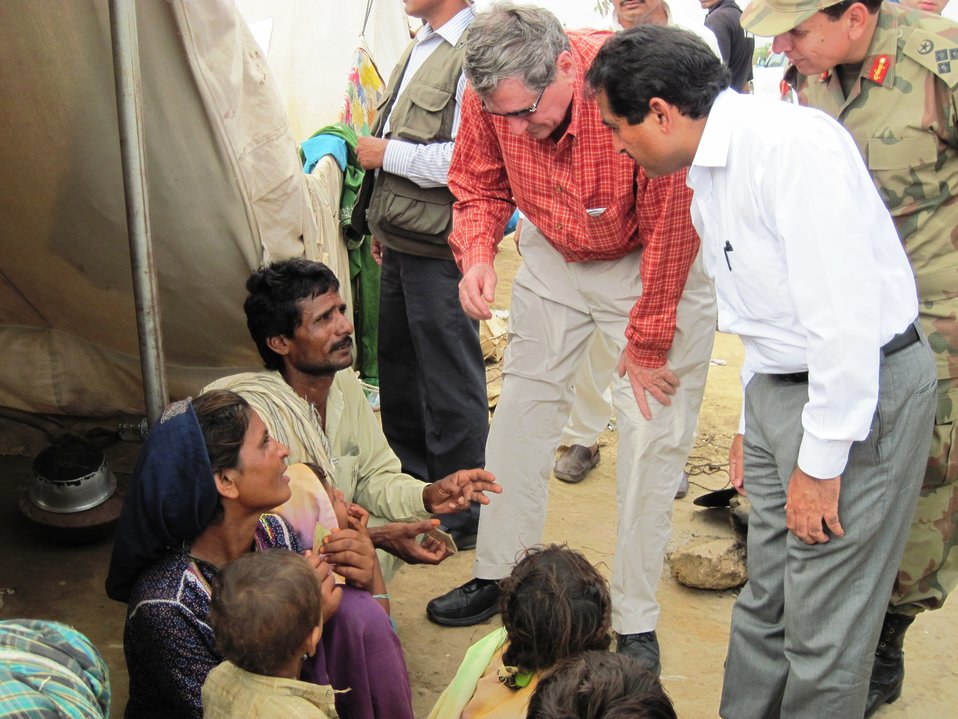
Special Representative Holbrooke Speaks With a Family

U.S. Special Representative to Afghanistan and Pakistan Richard C. Holbrooke speaks with a family taking refuge at the Makli Cricket Stadium Army IDP Camp in Thatta, Pakistan.